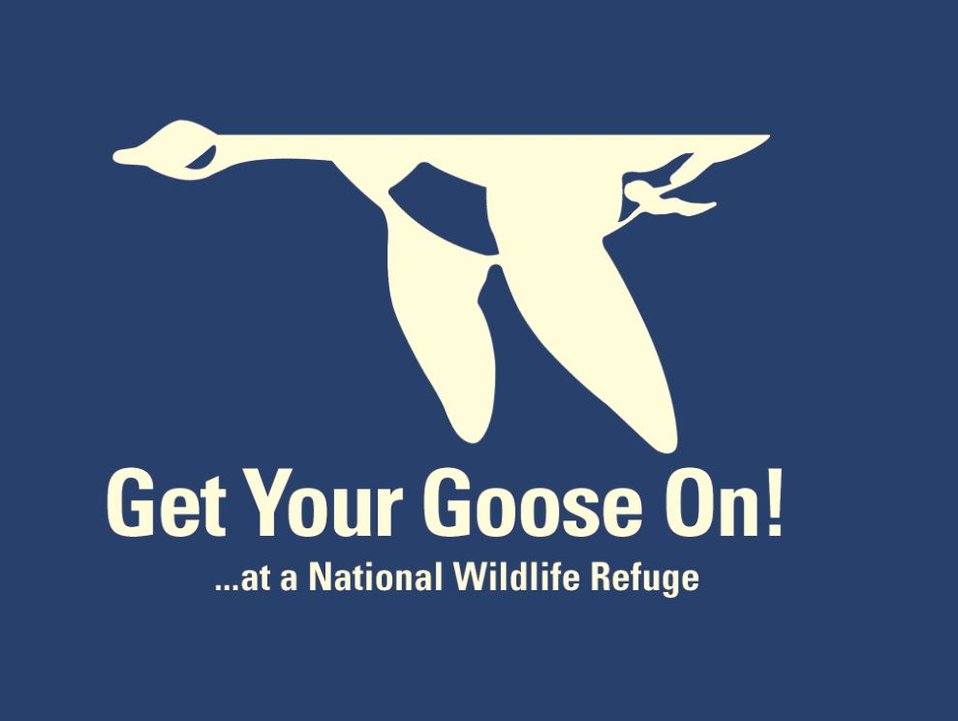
Get Your Goose On! Original Draft Layout